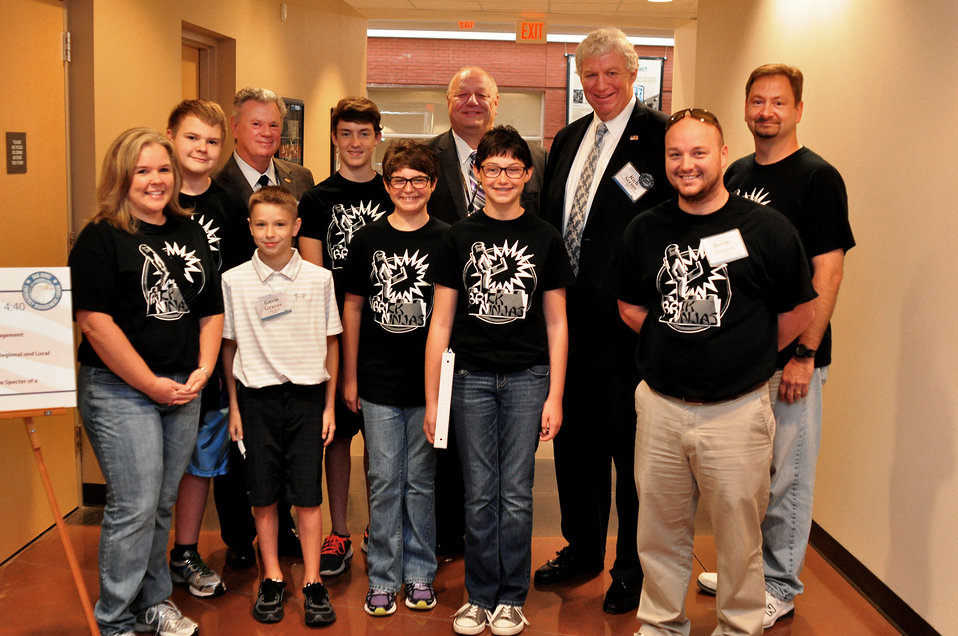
Major General(RET) James Bassham, Dir. TEMA, Richard Serino Deputy Administrator, FEMA Visits with Lego Champs Brick Ninjas in Oak Ridge 2013

13-116-365 DOE photo Lynn Freeny 9-26-2013 Oak Ridge Tennessee